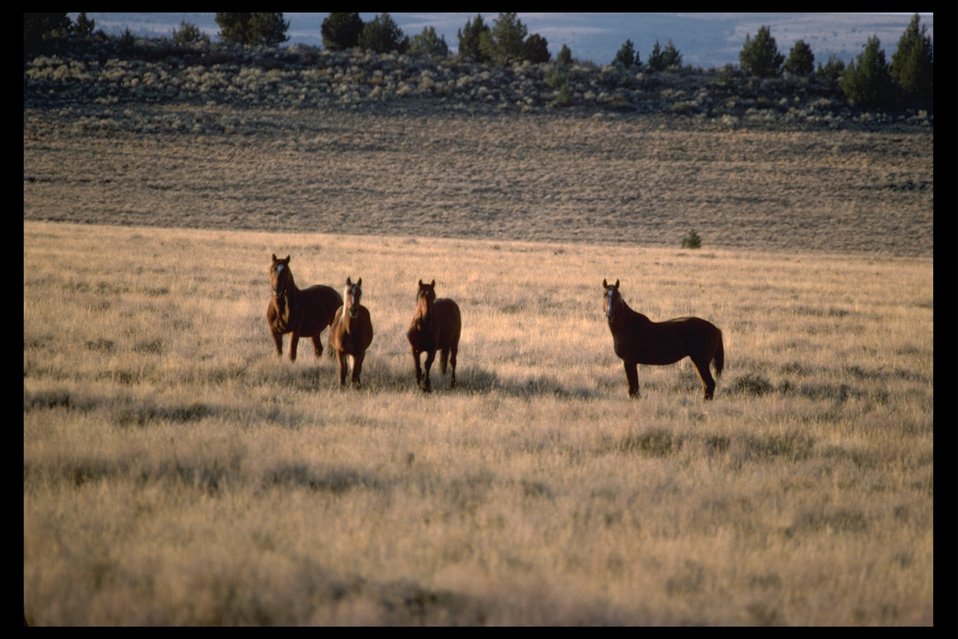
South Steens horses on the range.